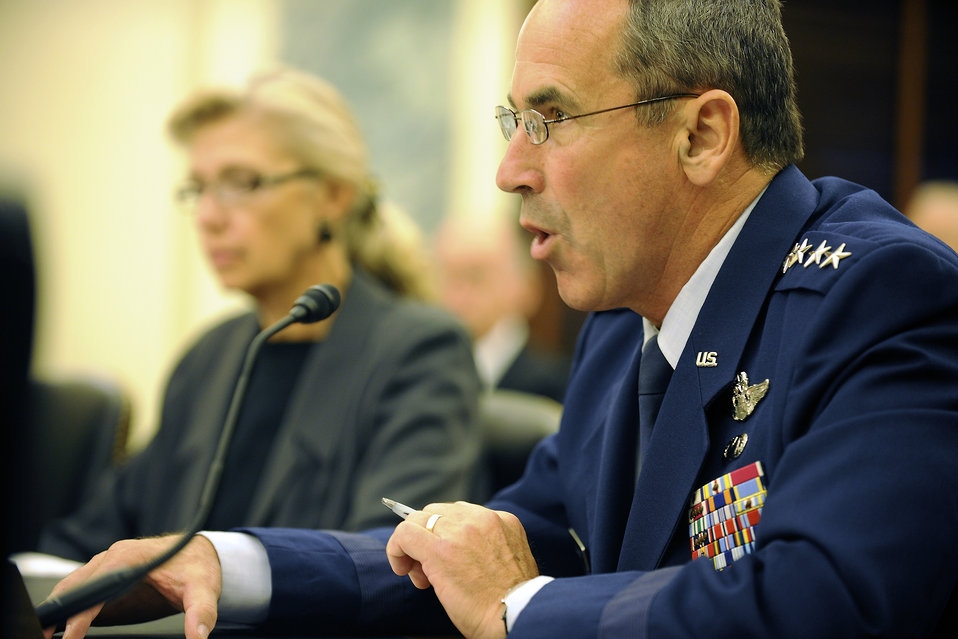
Air Force looks to reduce strategic airlift inventory

Gen. Raymond Johns, the Air Mobility Command commander, reads his opening statement July 13, 2011, during a Senate Armed Services Subcommittee on Seapower hearing on Capitol Hill in Washington, D.C. Johns testified with Christine Fox, the Department of Defense Cost Assessment and Program Evaluation director, and Gen. Duncan McNabb, the U.S. Transportation Command commander.